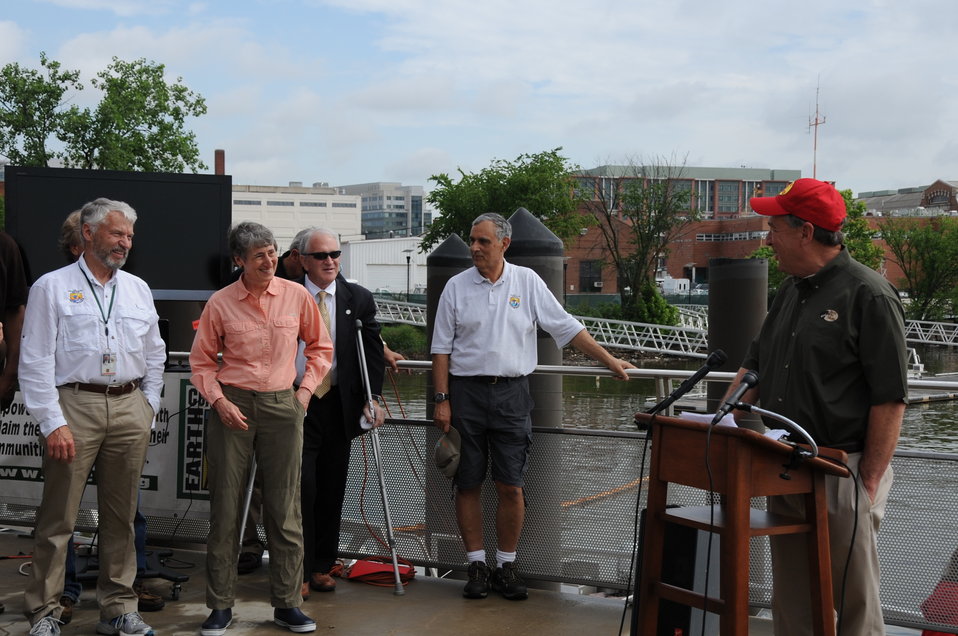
2013 National Fishing and Boating Week

Johnny Morris-Bass Pro Shops speaks at the welcome ceremony for the National Fisingh and Boating Week. in Washington, D.C.